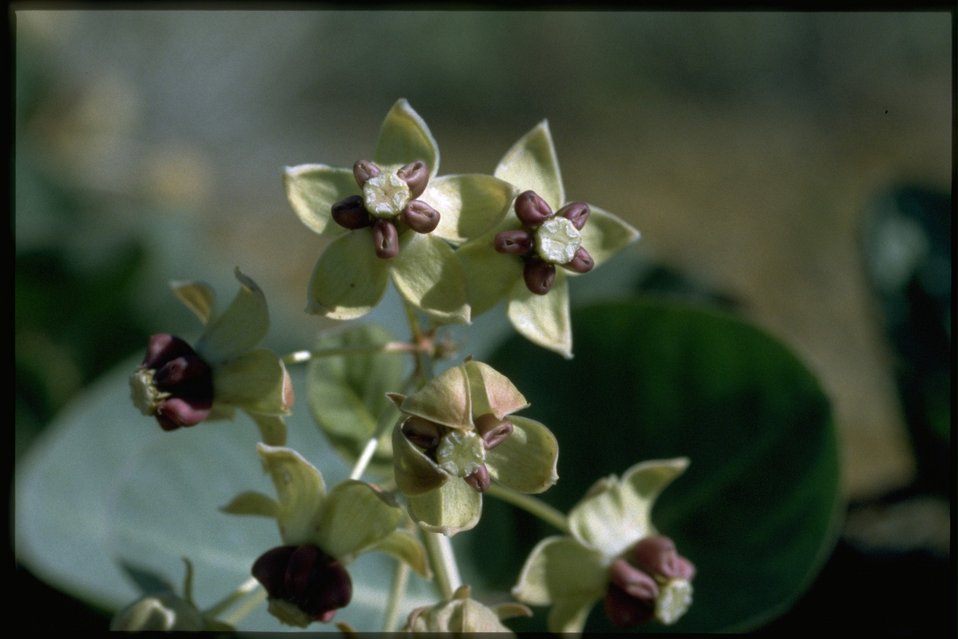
Closeup shot of Asclepias cordifolia.